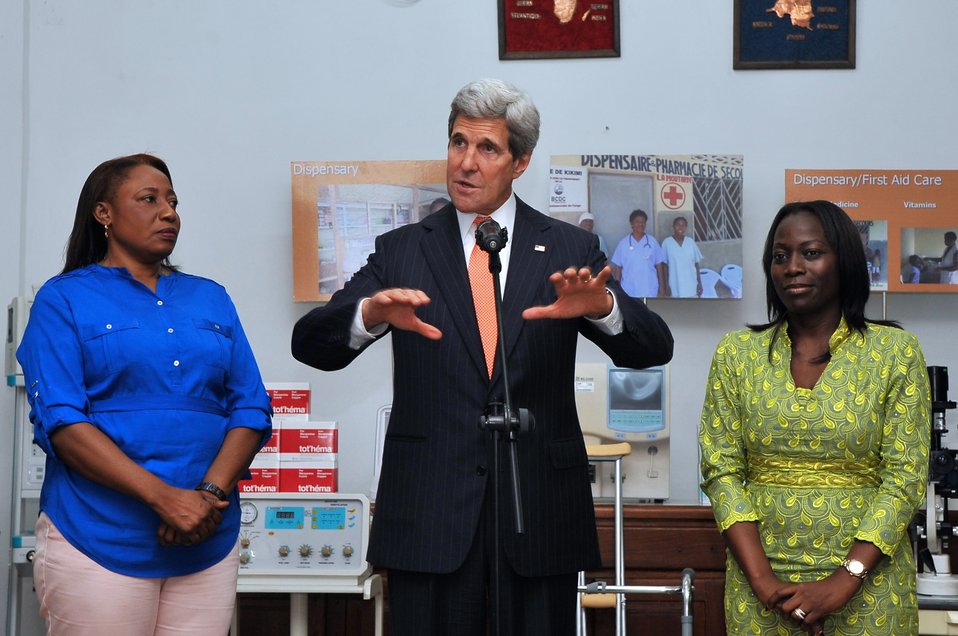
Secretary Kerry Speaks About Microfinance Program Started by YALI Graduate

U.S. Secretary of State John Kerry, flanked by Irene Mpoy, left, explains how Young African Leaders Initiative alumnae Patricia Nzolantima started a micro finance program to help start medical supply stores like the one he toured in Kinshasa, Democratic Republic of Congo, on May 3, 2014.